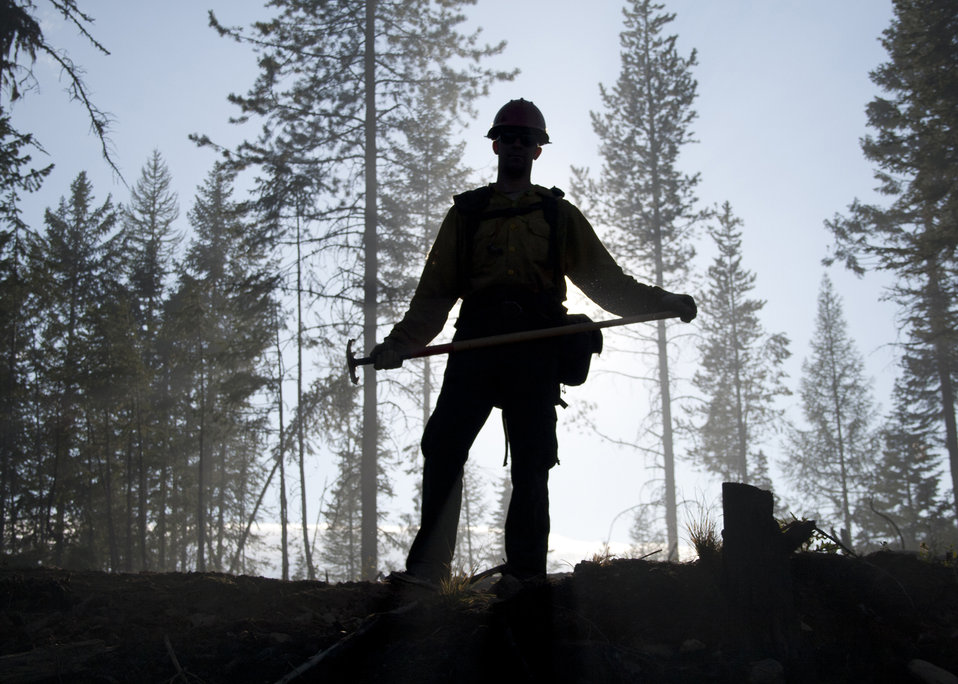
98 firefighters with support from three fire engines, two helicopters, two water tenders, a dozer and an air tanker battled to contain the 90 acre Rogers Fire located on Mt. Rogers five miles west of Aladdin, WA on the Colville National Forest. Firefighters worked under adverse conditions with steep terrain, heavy timber and gusting winds to reduce the loss of timber and protect the Rogers Mountain Trail. The Rogers Fire began on Aug. 9, 2011 and was controlled by Aug. 19, 2011 with mop up crews ensuring that no flare-ups occurred. Coleville National Forest has 1.1 million acres in northeastern Washington and includes the Kettle River, Selkirk mountain ranges, and the upper reaches of the Columbia River.